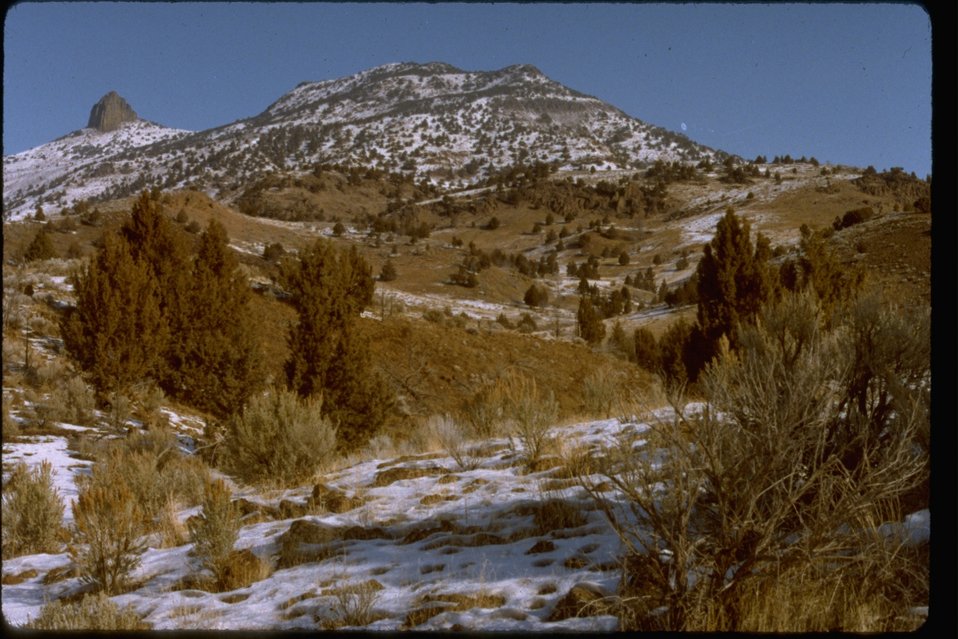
Looking up at Castle Rock with snow on the ground. WSA OR 3-18.